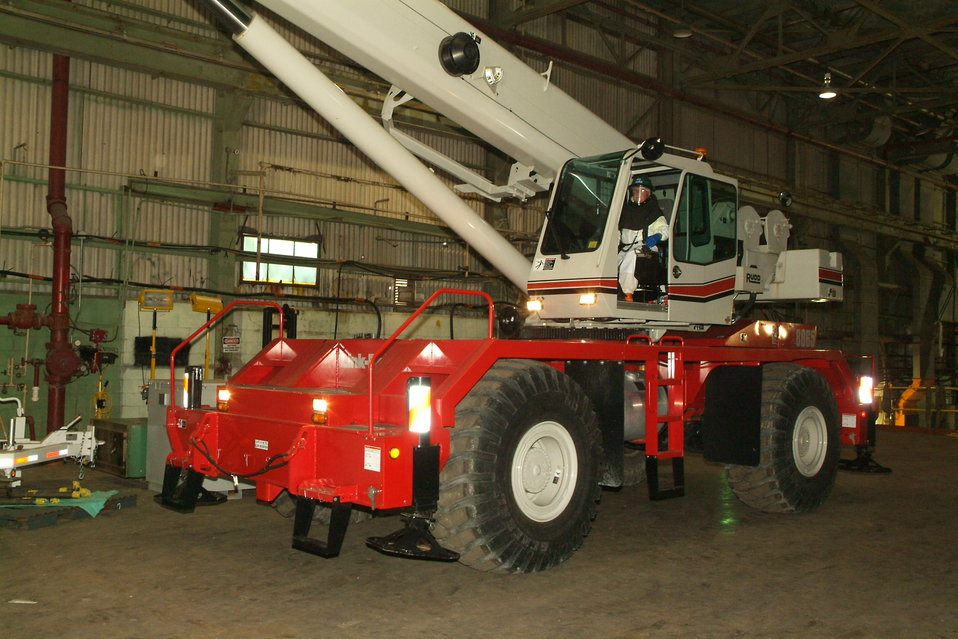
Crane Work at the Paducah Site

John Baker operates a 65-ton crane to remove old equipment and systems from the C-410 Feed Plant at the Paducah Site. This and two smaller cranes help expedite cleanup in what was a nine-facility complex spanning 200,000 square feet.